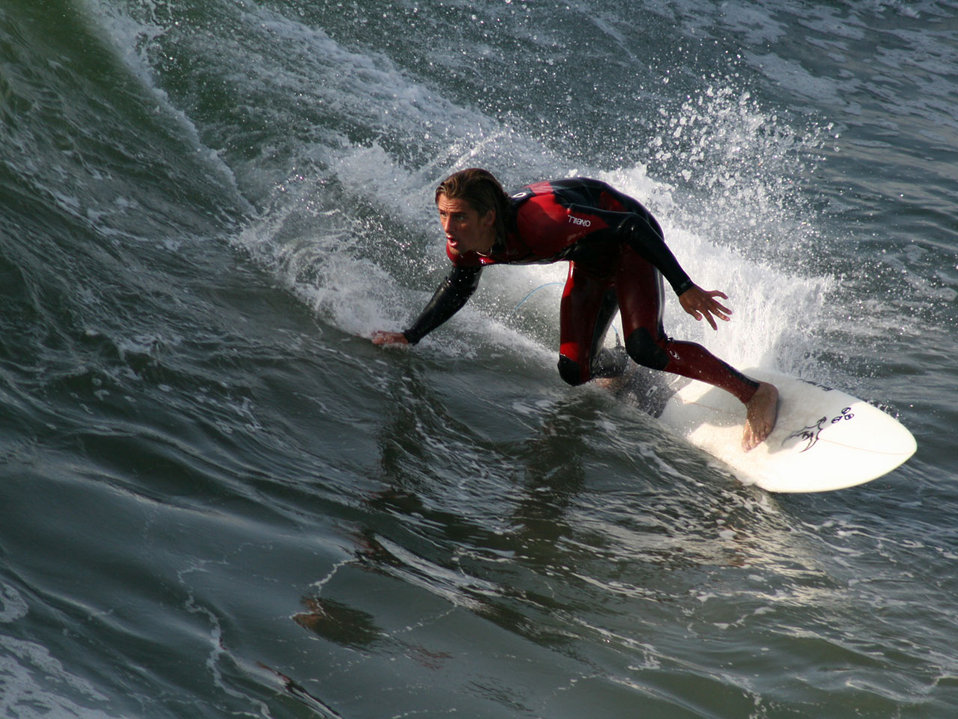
Surfer

Shot on the north side of huntington beach pier, huntington beach, ca, on 19 nov 2007..